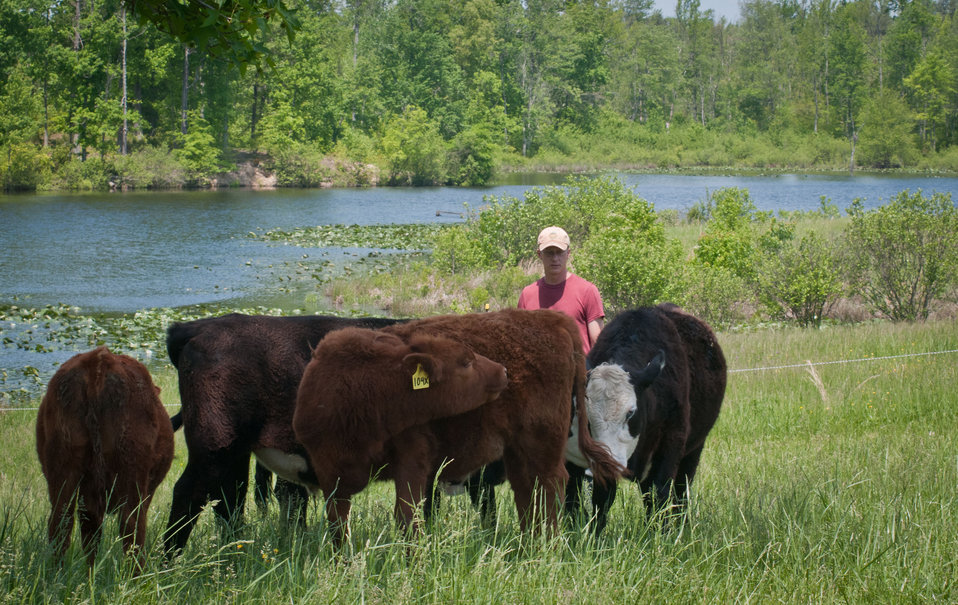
Cattle raised by Bruce Johnson at Dragonfly Farm are free-range, grass-fed, and very stress-free in Beaverdam, VA, on Friday, May 6, 2011, as they spend the day roaming one pasture or another and resting under shade trees. Sequential use of pastures allows the grass and land to re-grow and recover. Dragonfly and other farms produce meat products listed and ordered on Lulus Local Food website and distributed by Fall Line Farms food hub who offer a wide variety of household food staples and specialty items. Members pick their customized orders from an ever changing inventory of fruits, vegetables, meats, soaps, eggs, cheeses, flowers, honey, pastas, sauces, syrups, baked goods, mushrooms, flour and grains. Every Thursday, suppliers team up with other suppliers to deliver customized orders to, one of several pick-up points, designated by the customer in or around the Richmond area.